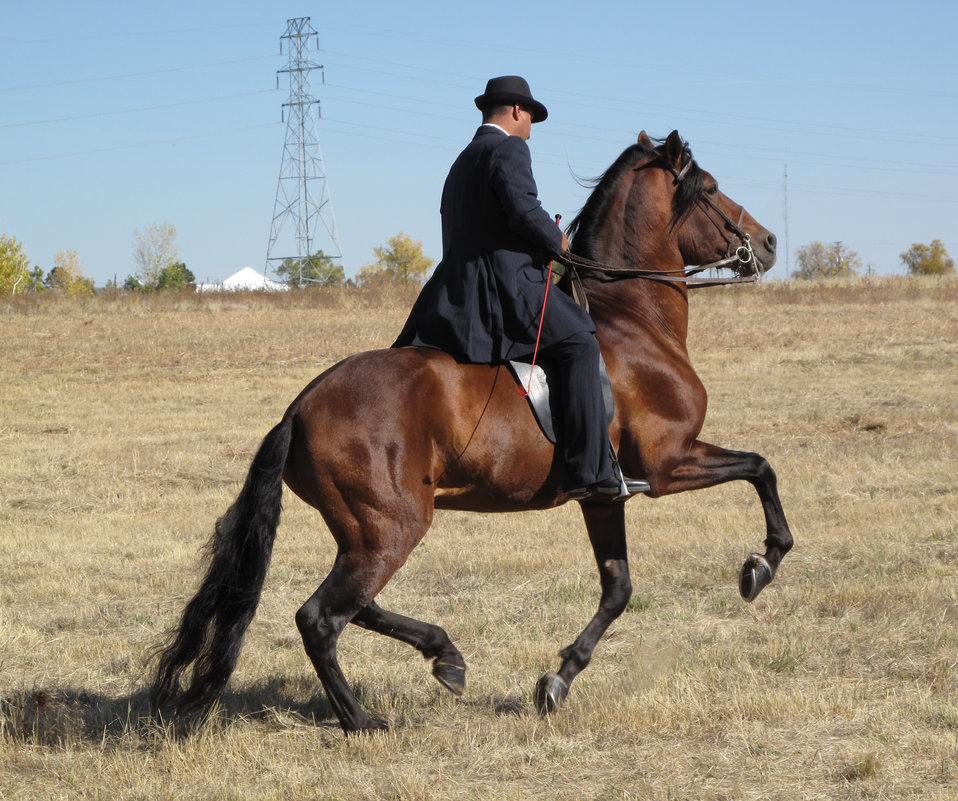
Refuge Round-Up 2010

Jose and his dancing horses.